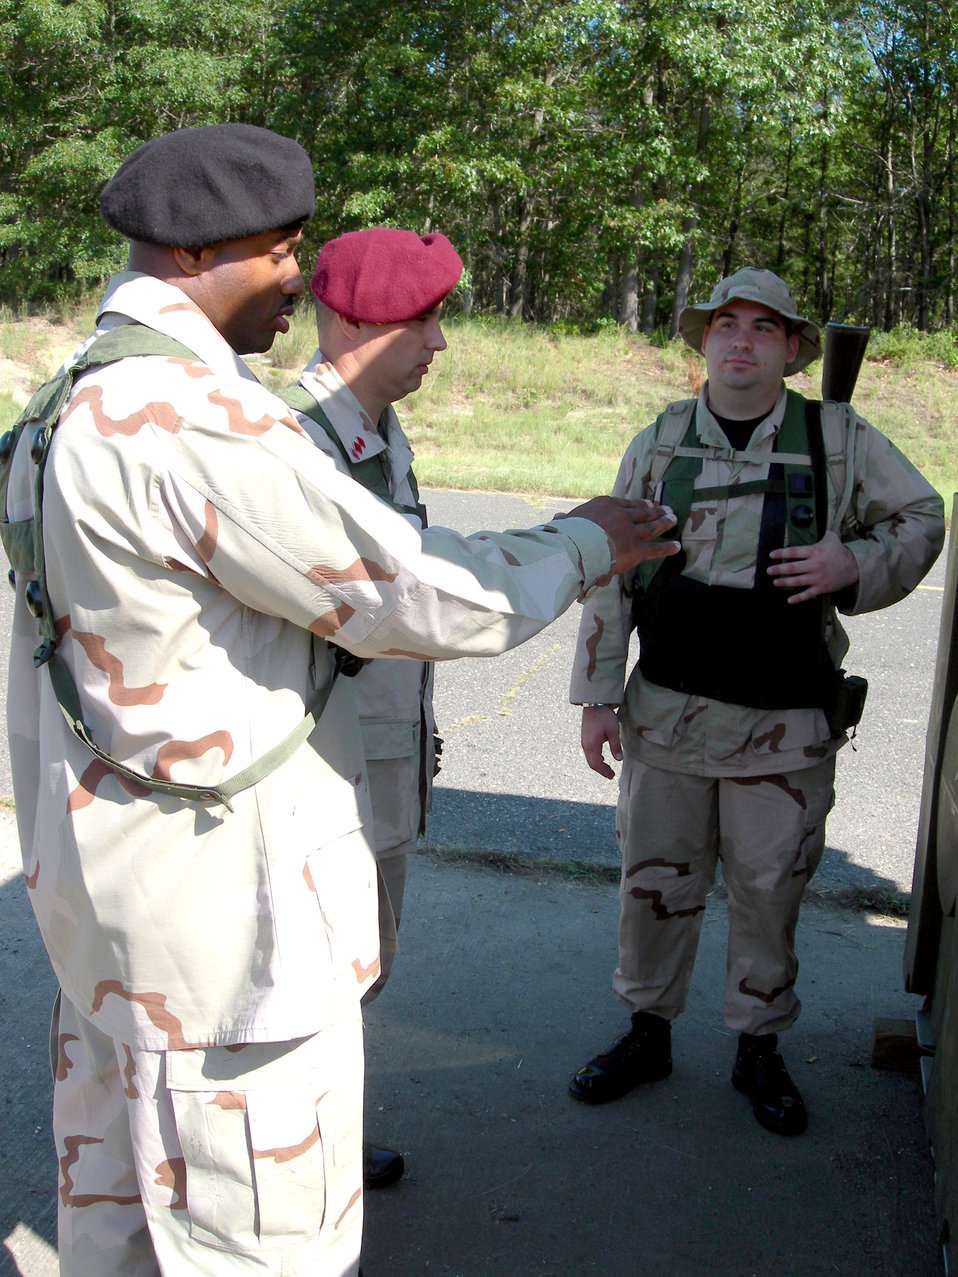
Airmen hone combat skills

Airmen participating as role players in a foreign national army discuss strategy during a scenario as part of Exercise Eagle Flag 06-3 at Naval Air Engineering Station Lakehurst, N.J., on July 14. The exercise tests Airmen from various career fields on their expeditionary combat support skills.